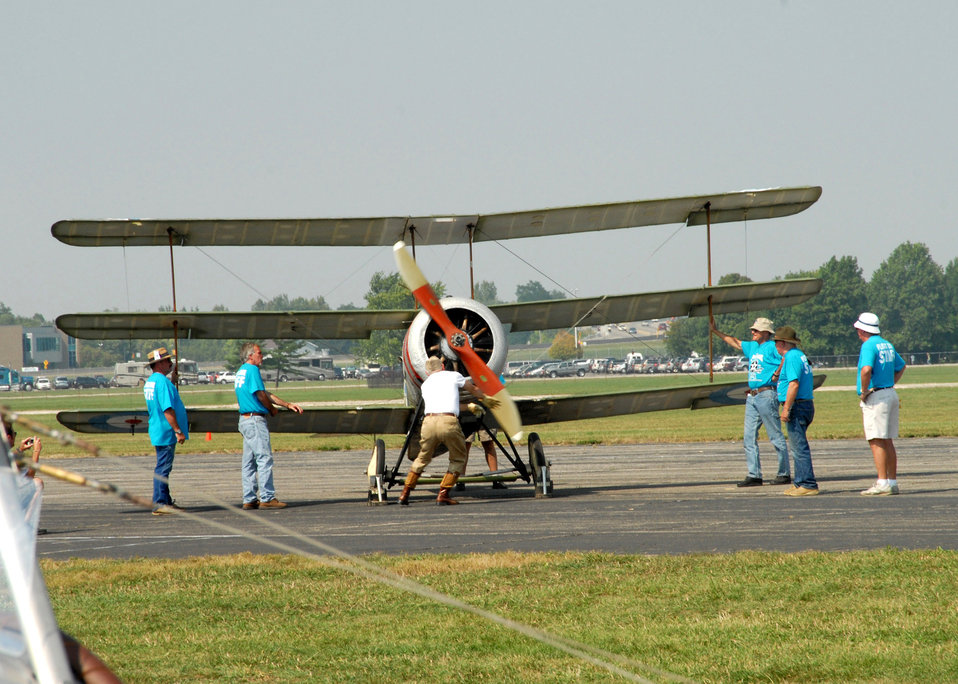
World War 1 Fly In

A ground crew attempts to start a Sopwith triplane while spectators watch at the Dawn Patrol Rendezvous World War I Fly-In Sept. 22 on the grounds of the National Museum of the United States Air Force in Dayton, Ohio. Activities included period re-enactors in a war encampment setting, era automobiles on display and participating in a parade, flying exhibitions by WWI radio-controlled aircraft, and a collector's show for WWI items.